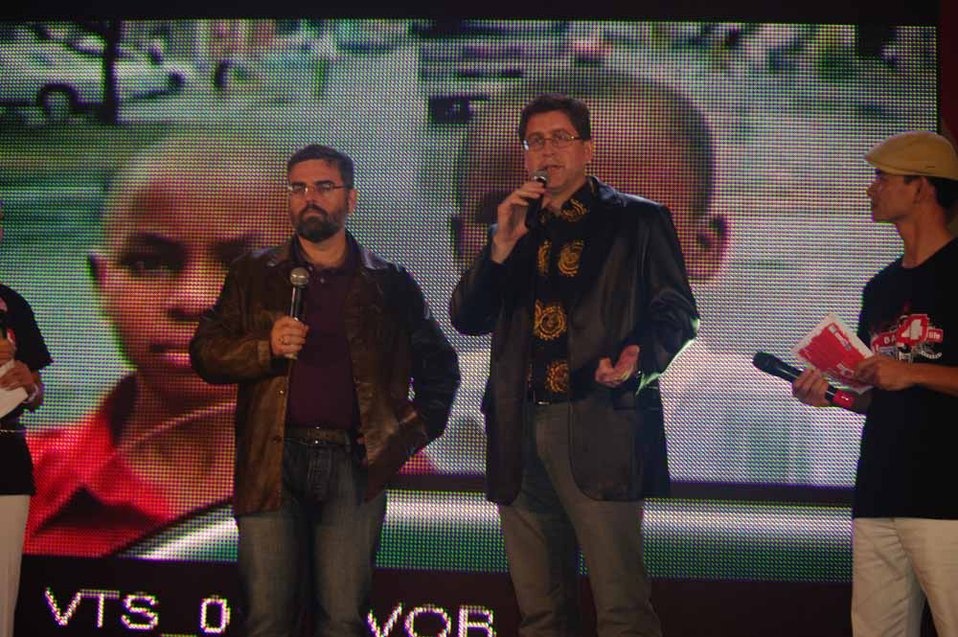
dance4life, Hanoi